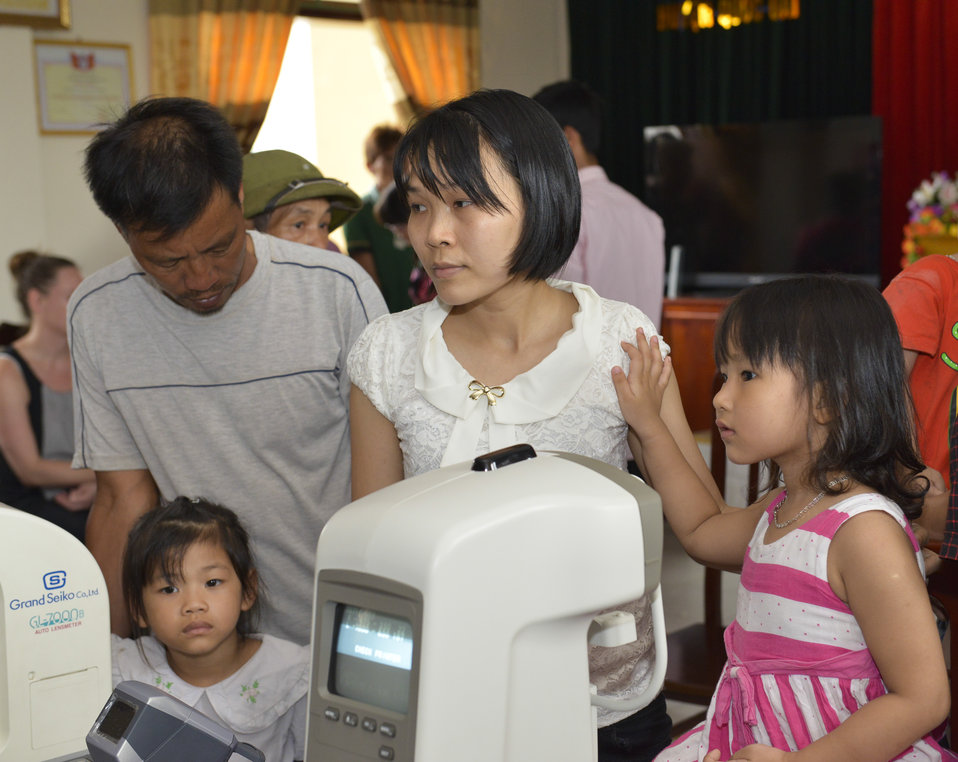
Eye screening for kindergarten children in Quoc Oai district of Hanoi

Quoc Oai, Hanoi. May 31, 2014.